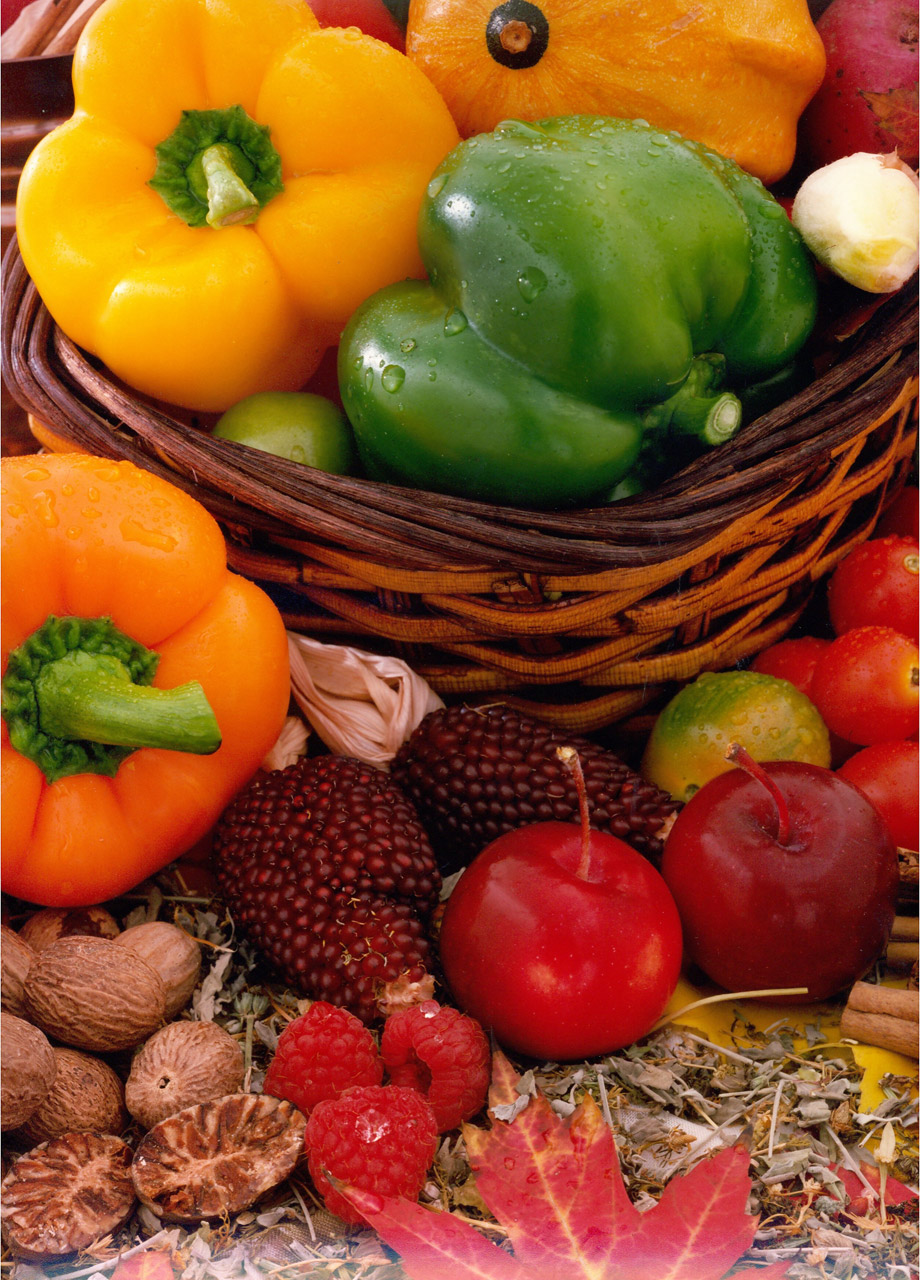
Fresh

Table top food photography.